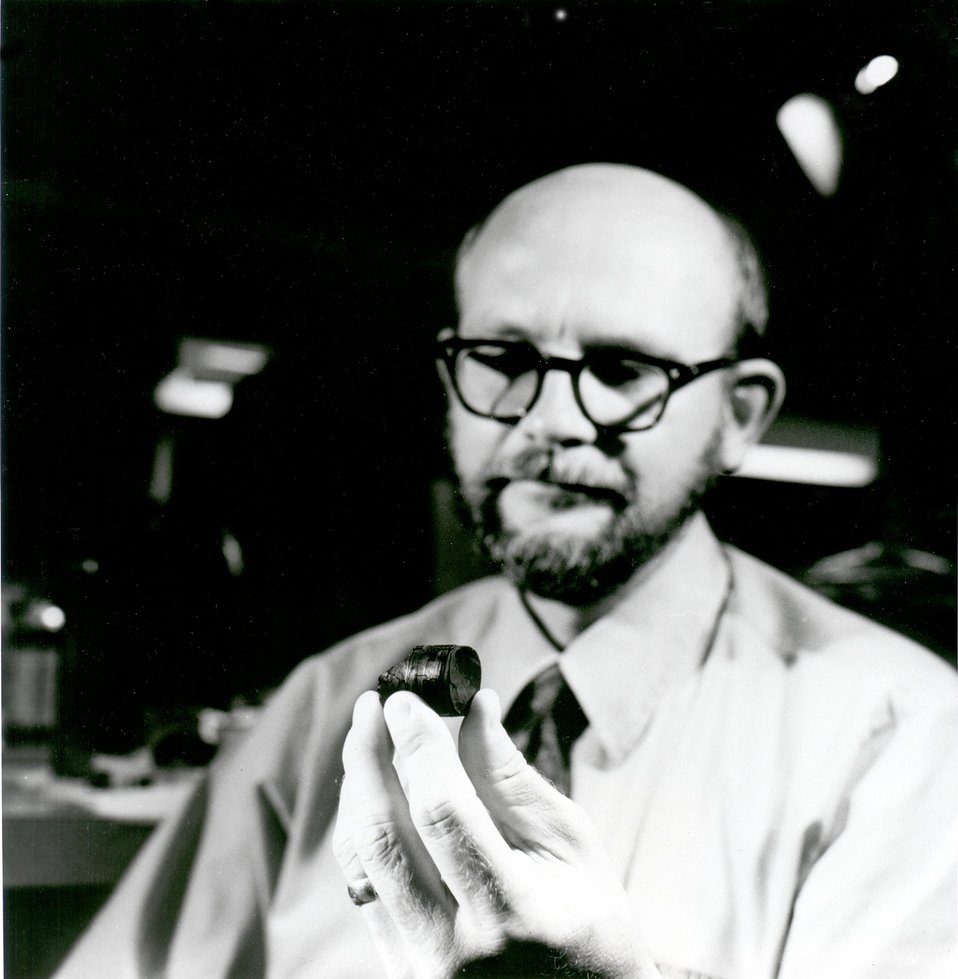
COAL GASIFICATION...This specimen of coal has been subject to 100,000 psi (7,000 atmospheres) in a high-pressure vessel to measure fracture and failure levels.